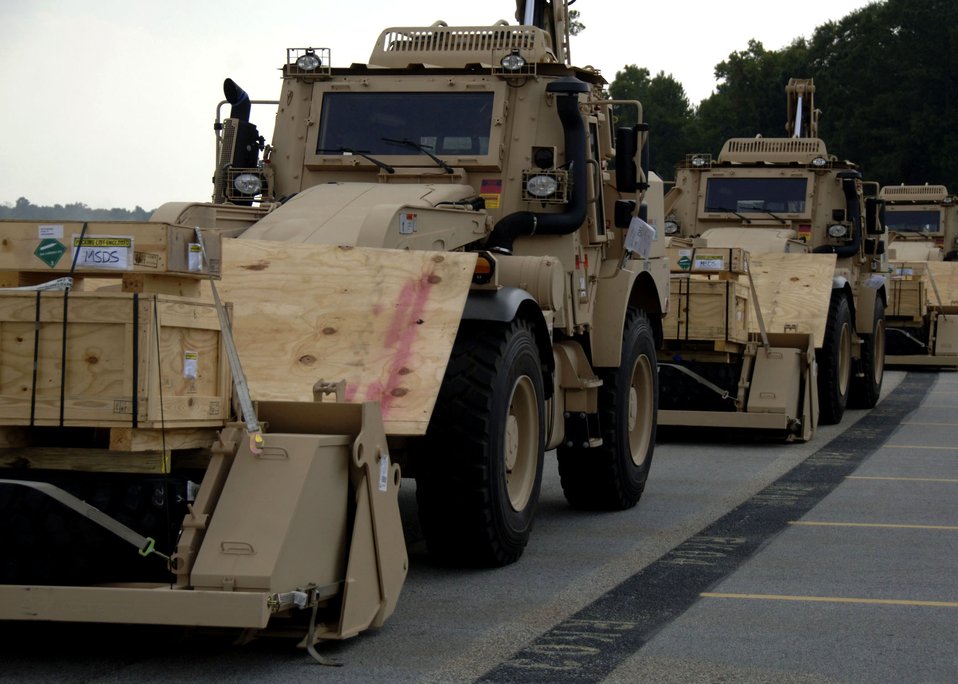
Charleston Airmen begin transporting new Army vehicles

Senior Airman Jared Parsons tightens a clamp to secure an Army High Mobility Engineer Excavator to the bed of a C-5 Galaxy before takeoff Sept. 29 at Charleston Air Force Base, S.C. The HMEEs will be transported to forward deployed locations to assist Soldiers and contractors in hostile environments. Airman Parsons is an air transportation journeyman with the 437th Aerial Port Squadron.